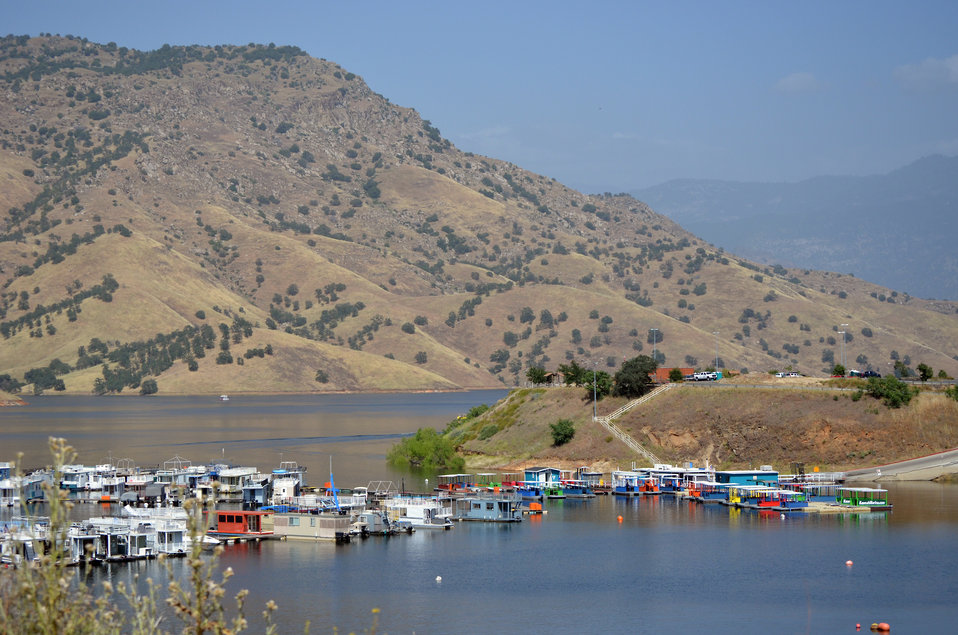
Lake Kaweah celebrates 50 years!

House boats float in Kaweah Lake below the Kaweah Heritage Visitor Center, the location for the U.S. Army Corps of Engineers Sacramento District 50th anniversary celebration of Lake Kaweah and Terminus Dam near Visalia, Calif., May 18, 2012. Since 1962, the dam has provided reduced risk of flooding and millions of dollars in agricultural, recreation and natural resources benefits.